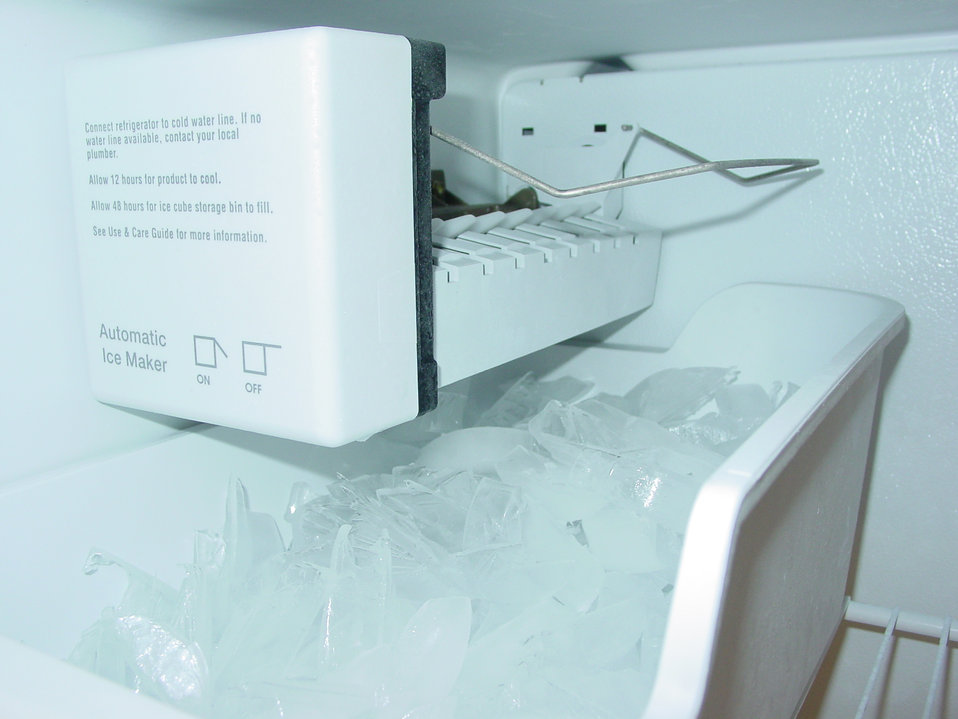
Ice Maker

One of four types tested by NIST researchers, this top-mount refrigerator freezer was outfitted with three thermocouples in each compartment, sampling the temperature every 30 seconds. In all units tested, electric heaters used to free ice from molds accounted for about three-quarters of ice-maker energy consumption.